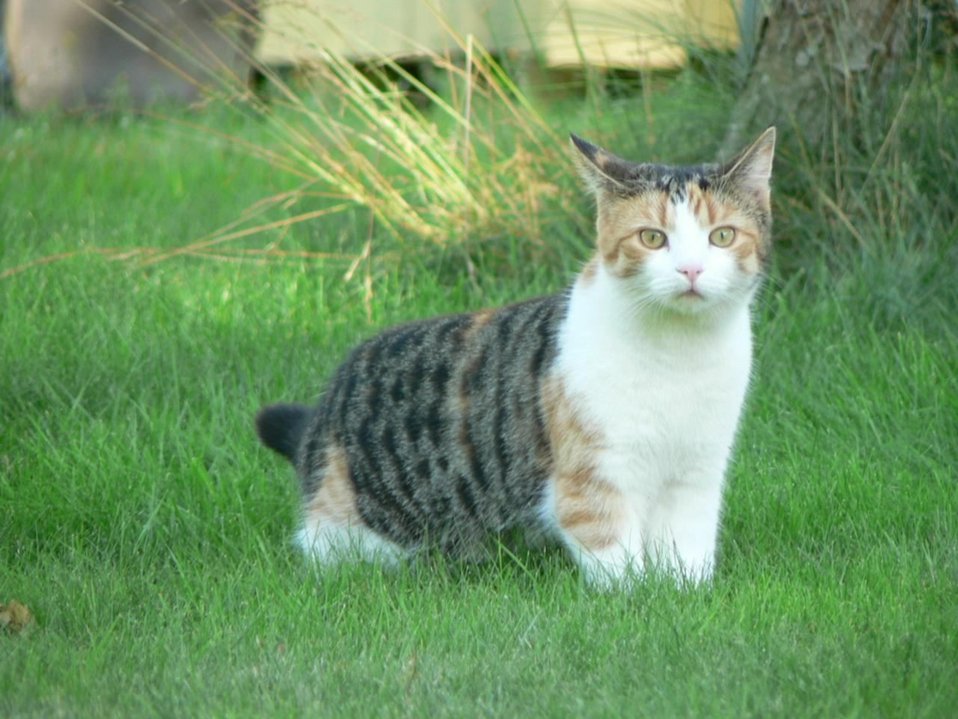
English:
Image title: Cat domestic Image from Public domain images website, http://www.public-domain-image.com/full-image/fauna-animals-public-domain-images-pictures/cats-and-kittens-public-domain-images-pictures/cat-domestic.jpg.html